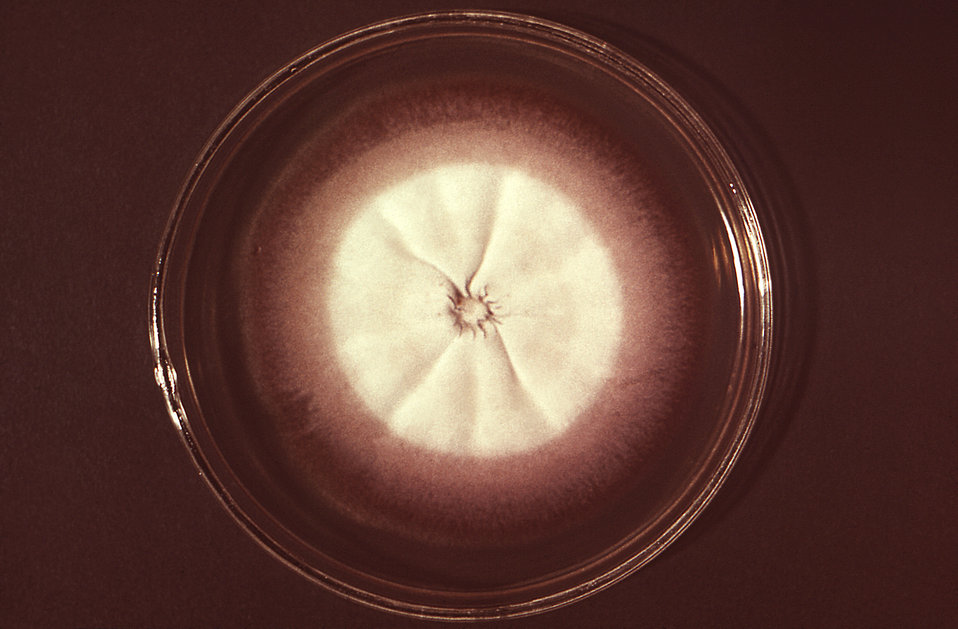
This image depicts a Petri dish containing an agar growth medium, atop which a single large anthropophilic colony of Trychophyton megninii, strain A-302, fungal organisms had taken shape. This dermatophyte causes fungal infections in humans involving the skin, hair, and nails. This colony exhibited its characteristic glabrous (smooth), slightly-ruffled surface, and an off-white to beige coloration. See PHIL 14950, for the appearance of a T. megninii fungal cology viewed from the reverse side of a Petri dish culture.